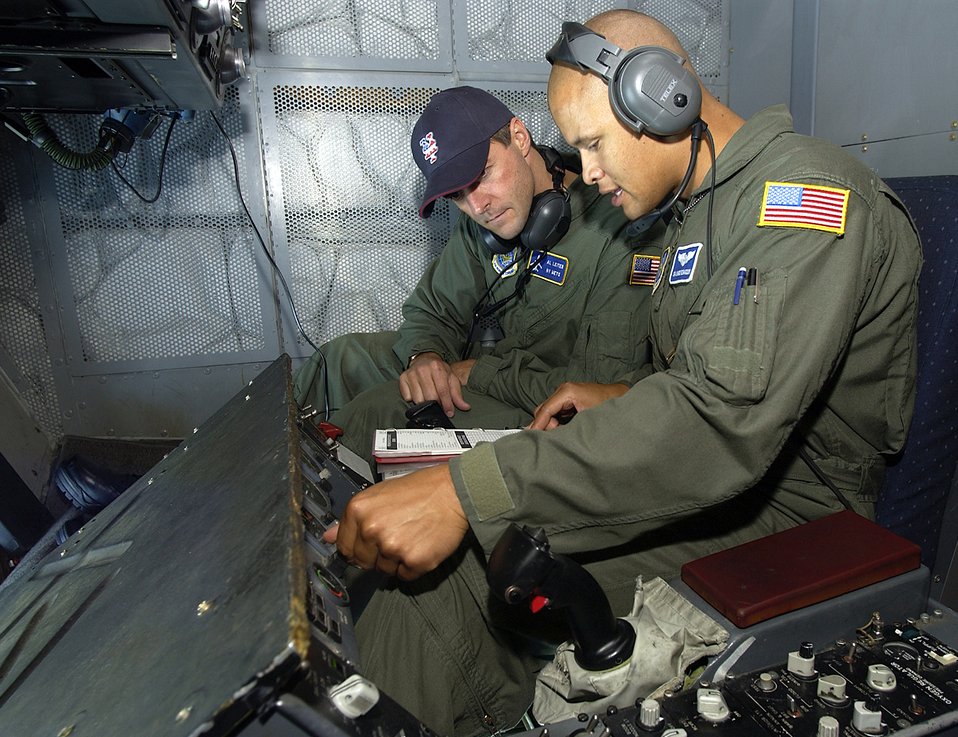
Swapping jobs

MCGUIRE AIR FORCE BASE, N.J. -- Senior Airman Chardo Richardson (right) shows New York Mets pitcher Al Leiter what goes on inside a KC-10 Extender boom control area and how to accomplish in-flight refueling. Airman Richardson will trade places with Mr. Leiter on June 22 to become a Met for a day. The